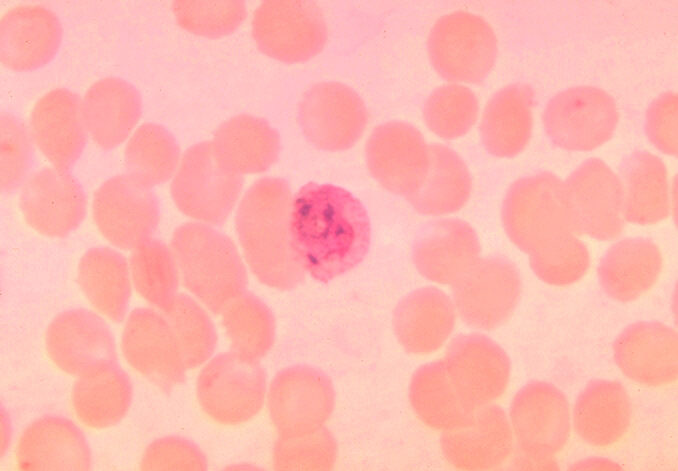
Plasmodium vivax mature schizont in blood smear.